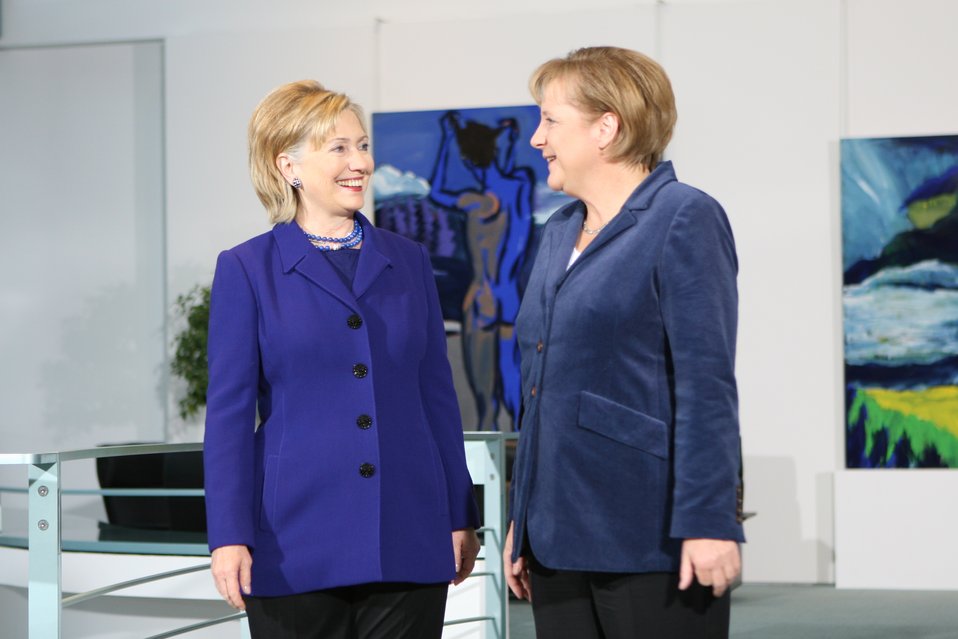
Secretary Clinton With German Chancellor Angela Merkel

U.S. Secretary of State Hillary Rodham Clinton stands with German Chancellor Angela Merkel, Berlin, Germany November 8, 2010.